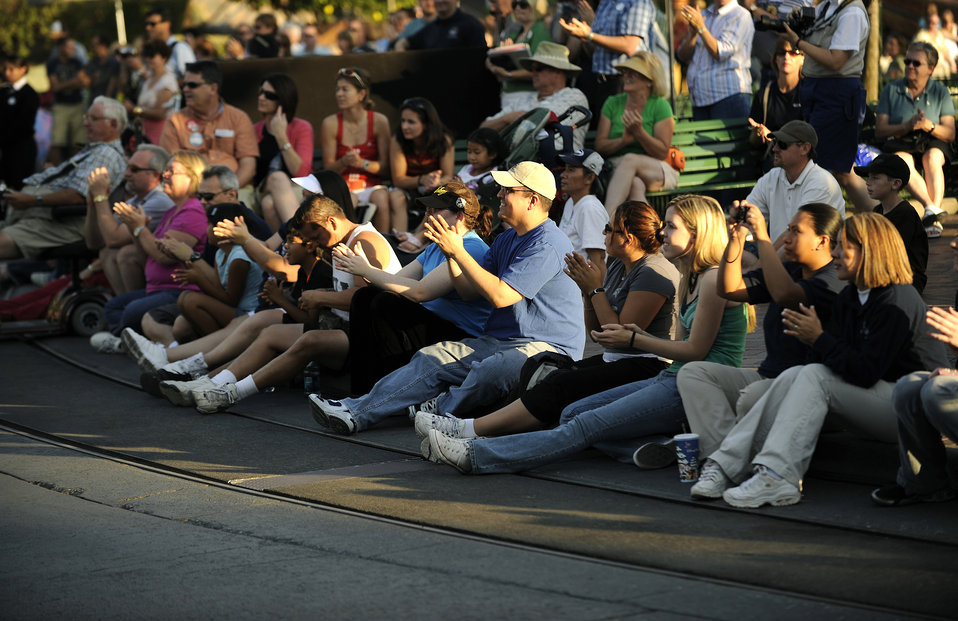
Air Force Week Los Angeles

Hundreds of spectators line the streets in front of Sleeping Beauty's Castle for a performance by the U.S. Air Force Band of the Golden West at the Disneyland Resort in Anaheim, Calif., Nov. 17. The band is performing during Air Force Week Los Angeles, an event designed to educate the local population about the Air Force's capabilities and missions through various activities and exhibitions in the Los Angeles area.